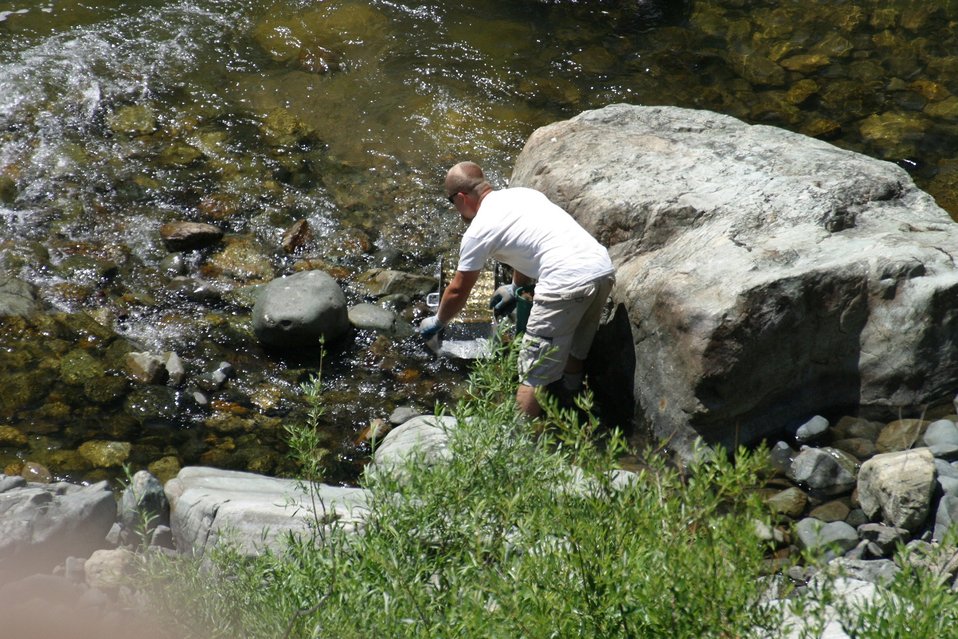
Gold sluce box below Grave Creek Falls.